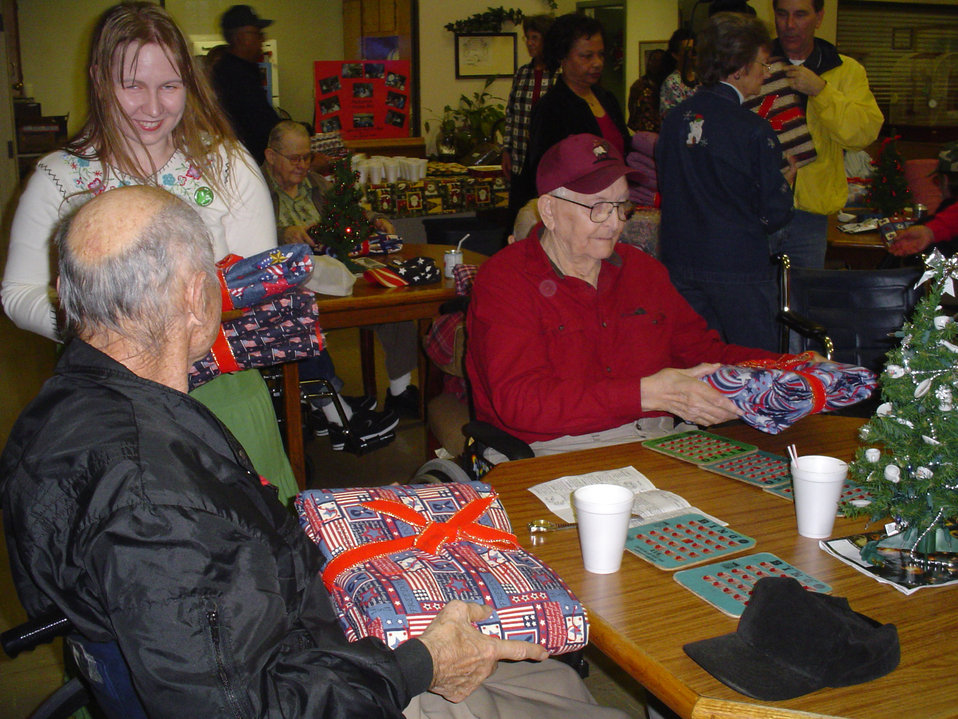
Air Guard leaders explore ways to reset force